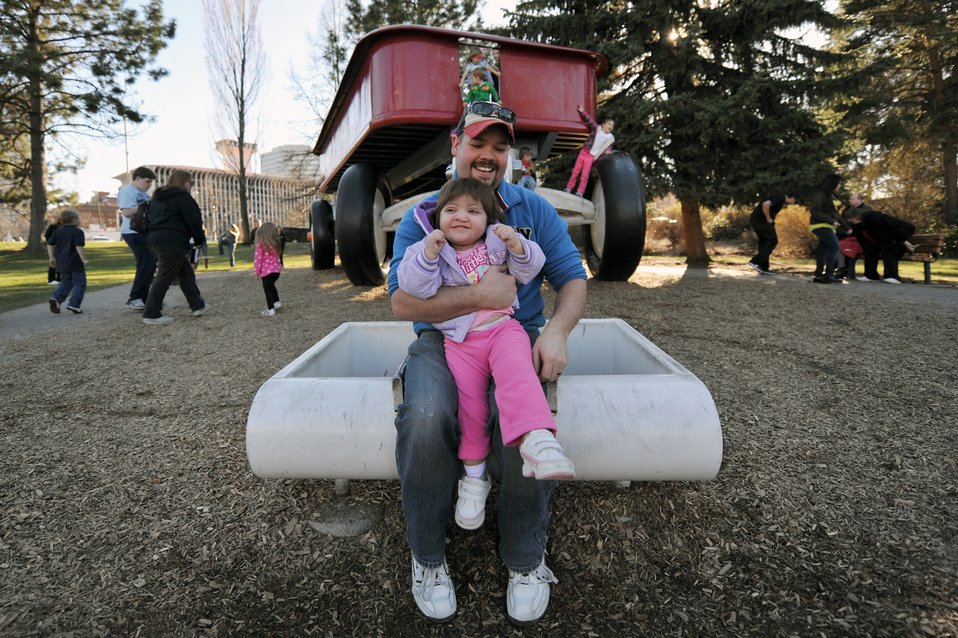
Exceptional Family Member Program

Matt Whitford holds his daughter, Braelyn Whitford, as they slide down a Red Wagon slide in Spokane, Wash., on Apr. 9, 2011. Braelyn is diagnosed with Kabuki Syndrome. Braelyn and her family are assisted through the Exceptional Family Member Program which connects active duty family members who have special needs with many helping agencies both on- and off- base.